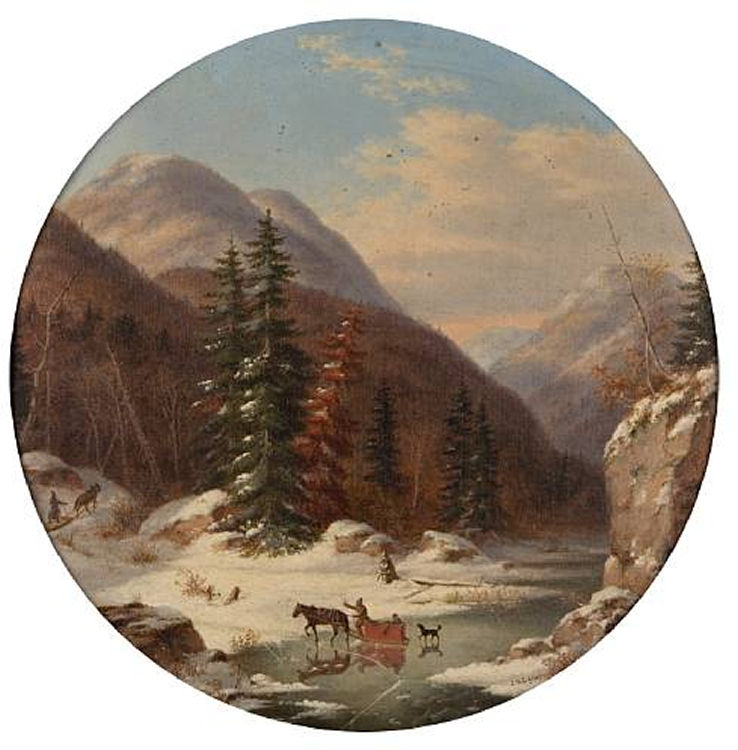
In the Mountains below Quebec, North Shore, French Canadians in Early Winter, oil painting by Cornelius Krieghoff, 17.5 in.